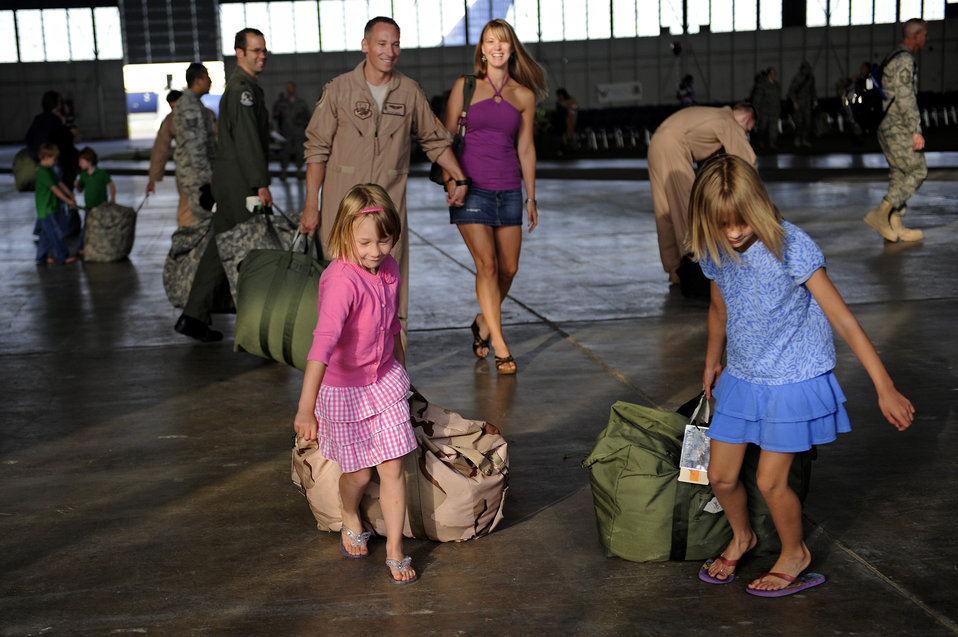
Welcome back

Everyone is all smiles as Capt. William Jacks walks with his wife, Nicole, and daughters, Rachel (left) and Anna, after returning home from a six-month deployment to Southwest Asia, July 28, 2010, at Ellsworth Air Force Base, S.D. Captain Jacks is a B-1B Lancer pilot assigned to the 34th Bomb Squadron.